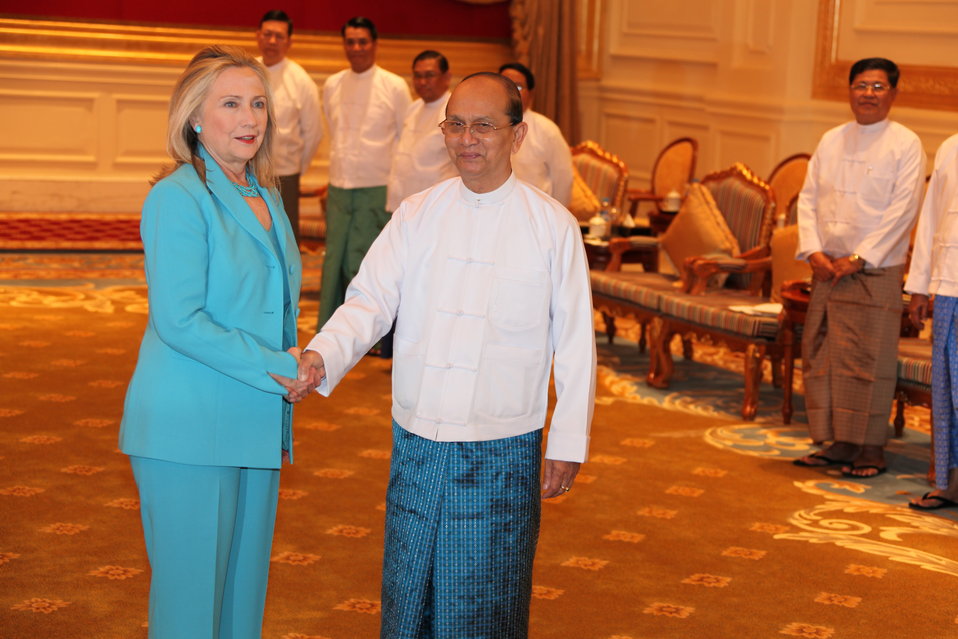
Secretary Clinton Meets With Burmese President U Thein Sein

U.S. Secretary of State Hillary Rodham Clinton meets with with Burmese President U Thein Sein at the Office of the President in Nay Pyi Taw, Burma, on December 1, 2011.